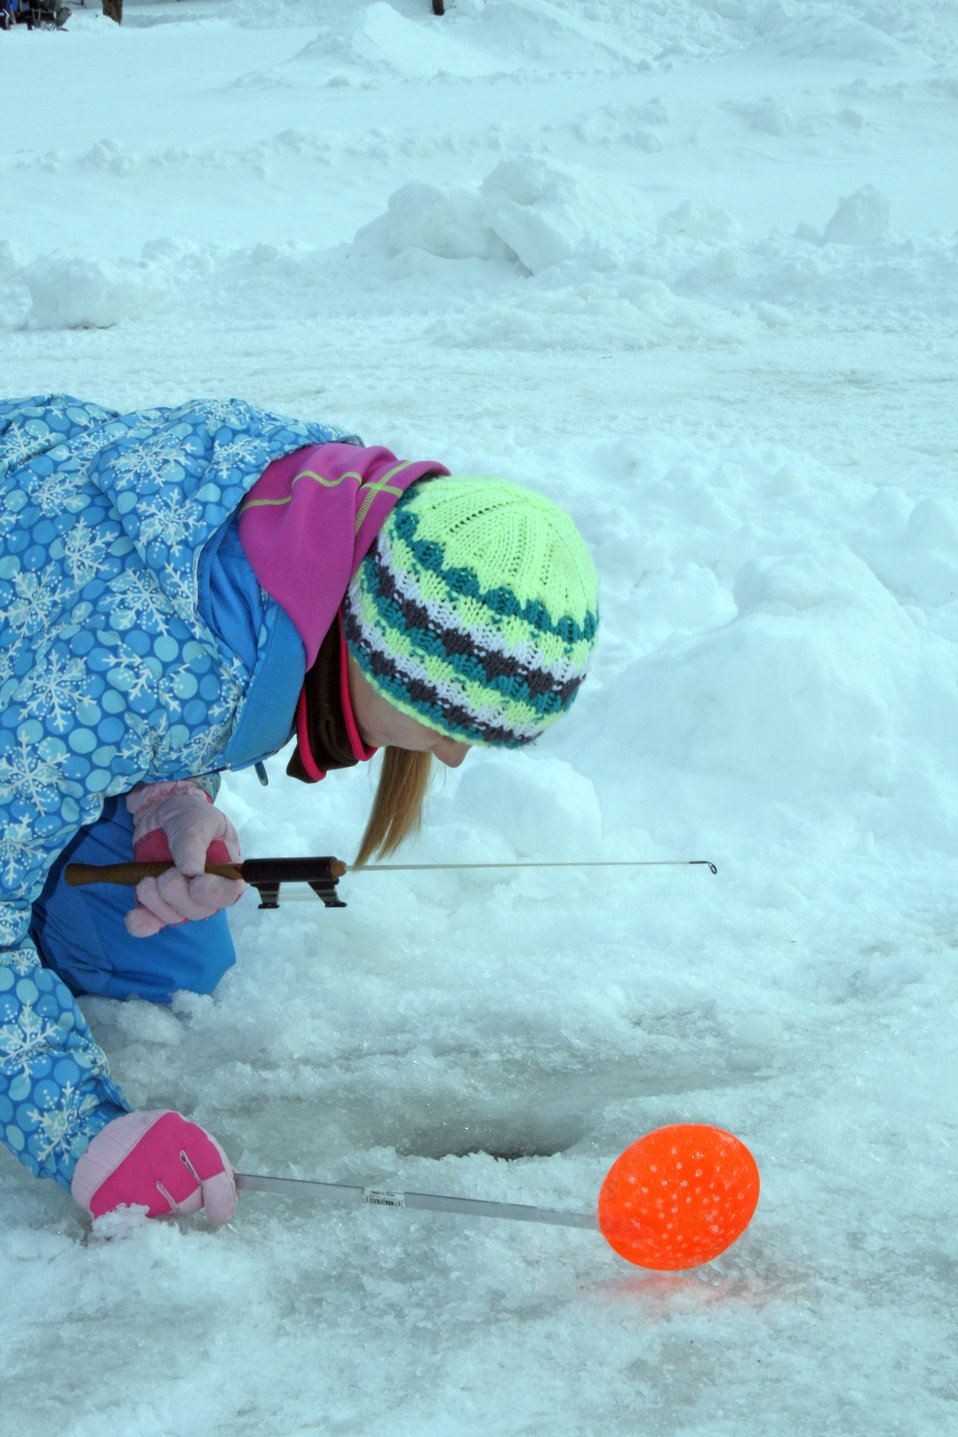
Watching and Waiting

A young angler gets a closer look at what’s going on during the annual youth ice fishing event held on the Upper Mississippi River National Wildlife and Fish Refuge – Winona District.